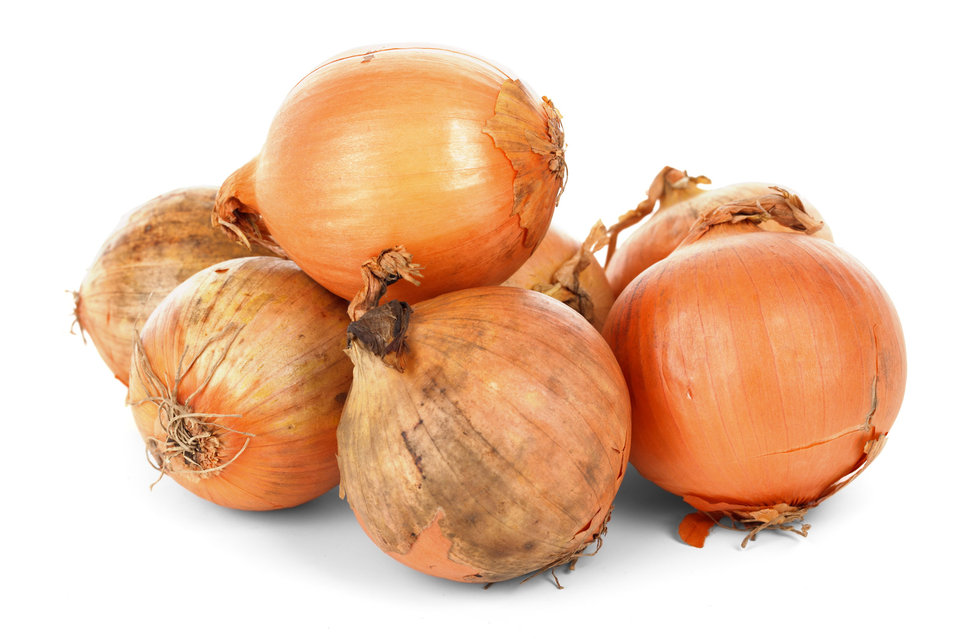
Onions isolated

A pile of fresh onions isolated on white background.